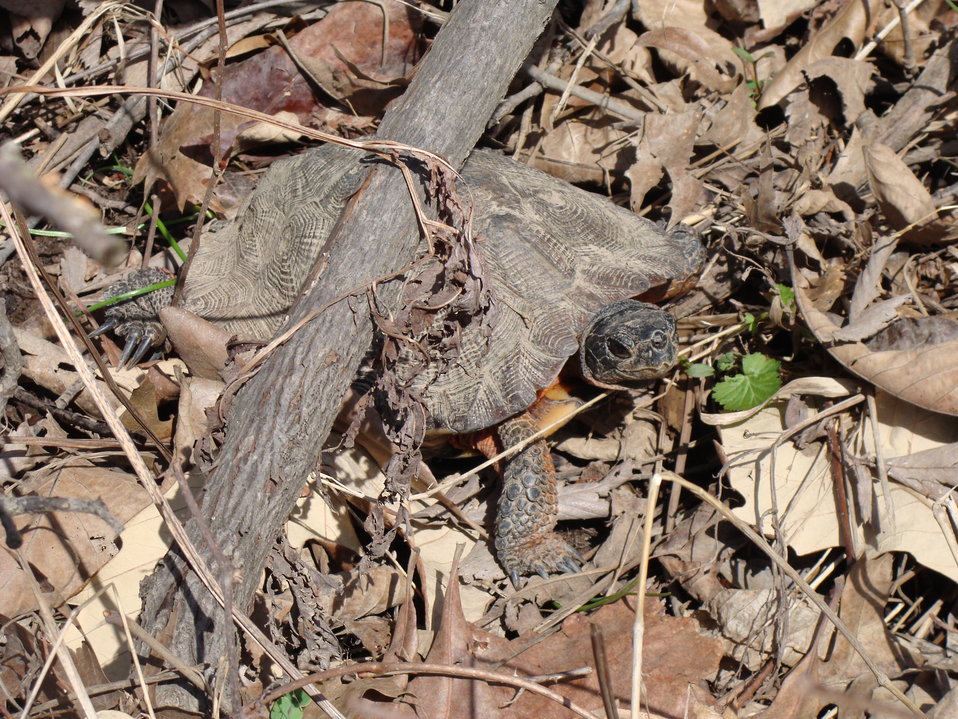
Wood Turtle

Adult Wood turtle walking at Great Swamp National Wildlife Refuge